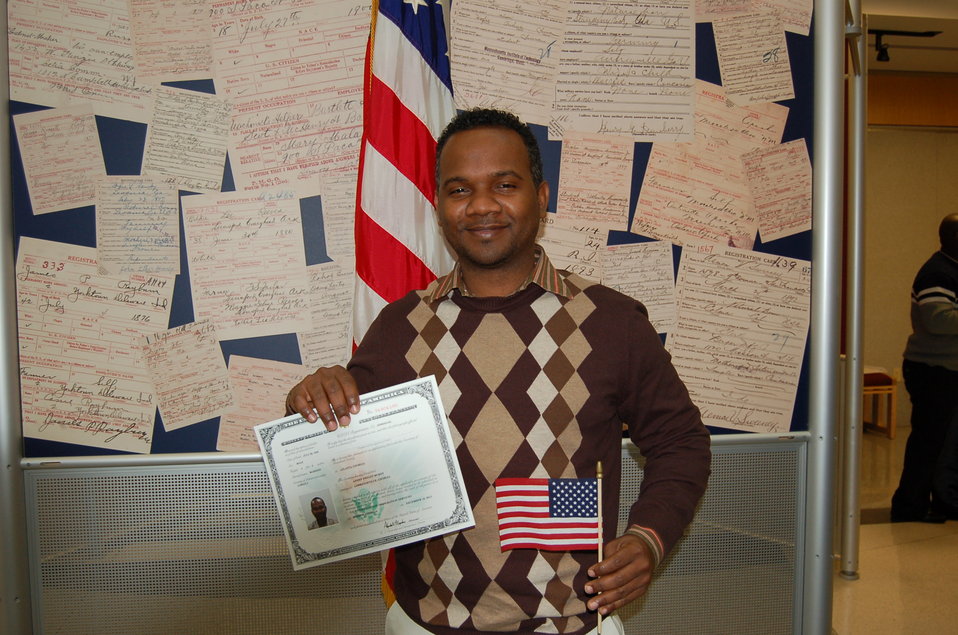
New Citizens